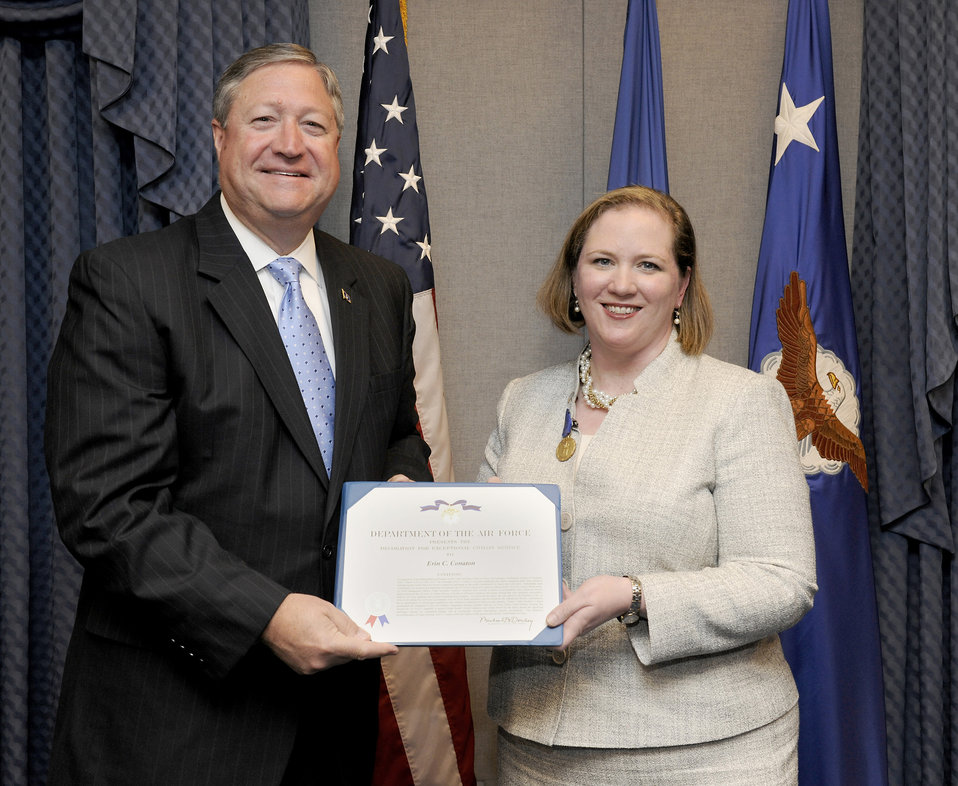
Undersecretary of the Air Force Erin Conaton

Secretary of the Air Force Michael Donley presents Undersecretary of the Air Force Erin C. Conaton the Air Force Decoration for Exceptional Civilian Service during a Pentagon ceremony May 30, 2012. Conaton, who has served as the Air Force undersecretary since March 2010, was confirmed by the Senate May 24 as the next undersecretary of defense for personnel and readiness. She will move to that position in June.